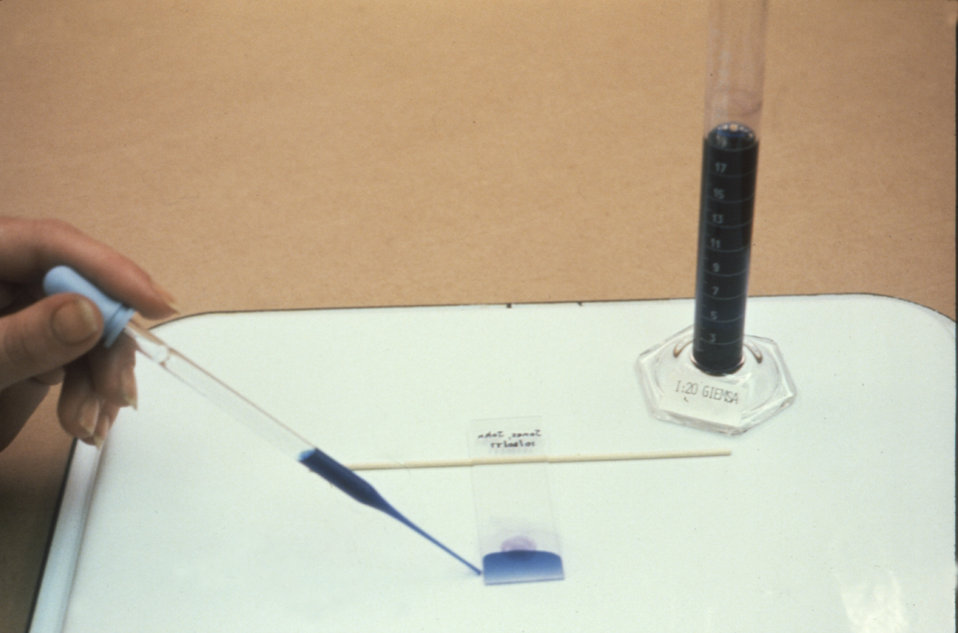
A technician is staining a thick blood film with a Giemsa applicator stick in a parasitology lab.